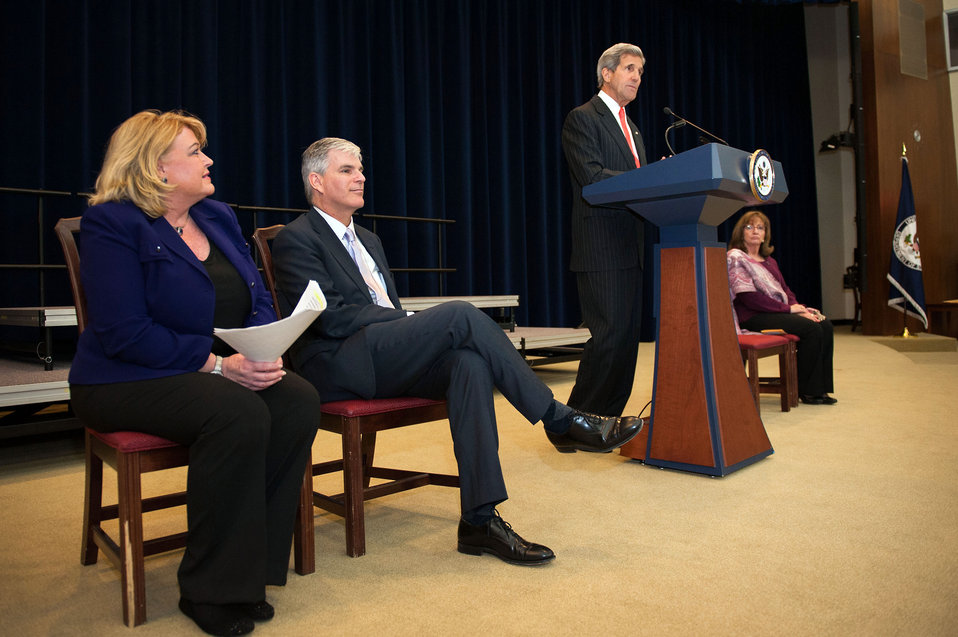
Secretary Kerry Delivers Remarks at 103rd Civil Service Class Swearing-in Ceremony

U.S. Secretary of State John Kerry delivers remarks at the swearing-in ceremony for the 103rd Civil Service Class at the U.S. Department of State in Washington, D.C., on April 25, 2014.